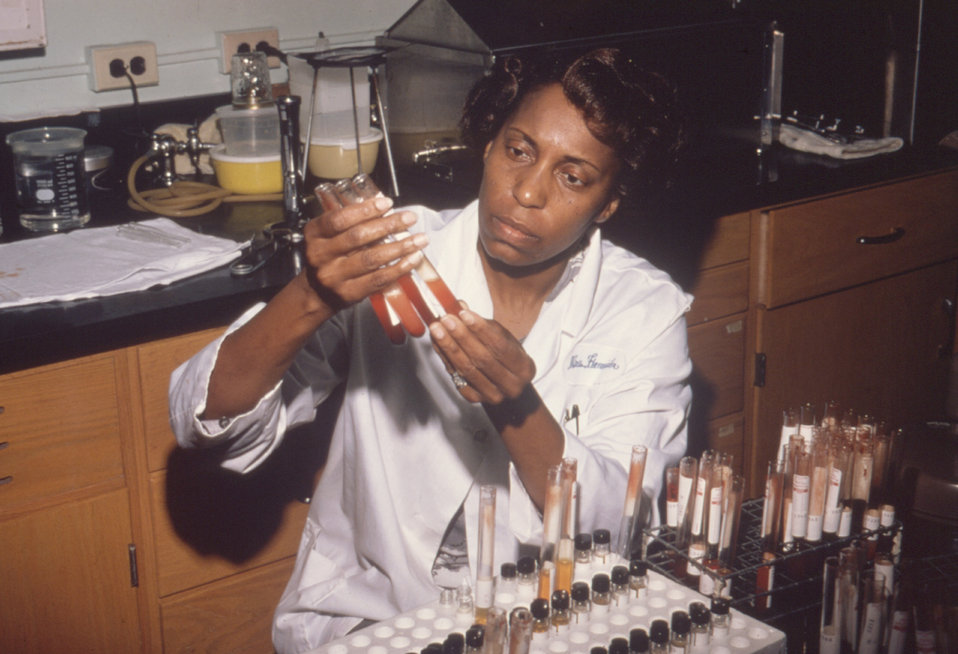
Here lab technician Mary Flemister is seen performing tests on vials containing blood.